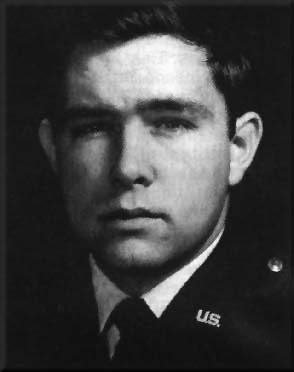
Capt. Steven L. Bennett

1970s -- Capt. Steven L. Bennett